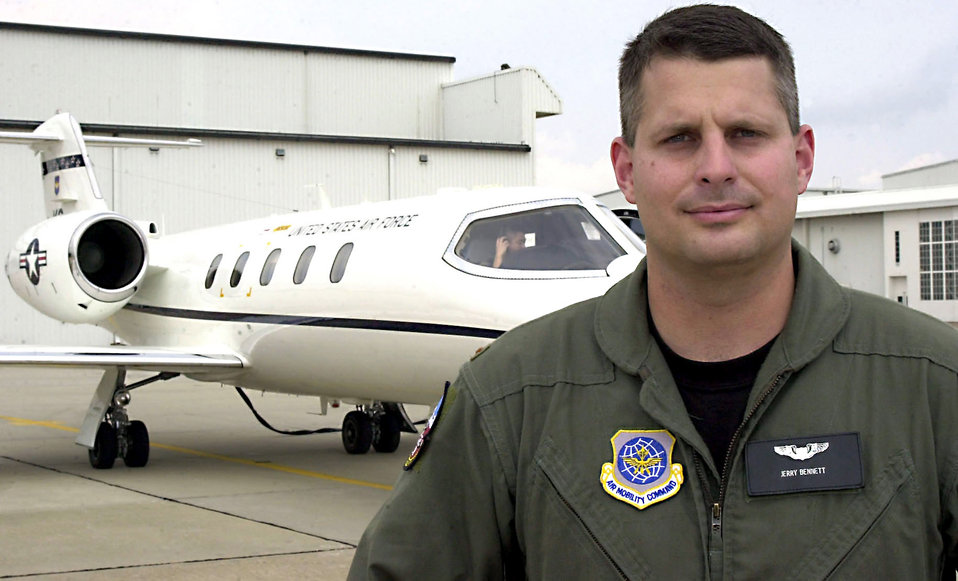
Bennett

KEESLER AIR FORCE BASE, Miss. -- Second Lt. Jerry Bennett, a former enlisted weather forecasting instructor here, has returned to the base for C-21 flight training with the 45th Airlift Squadron.